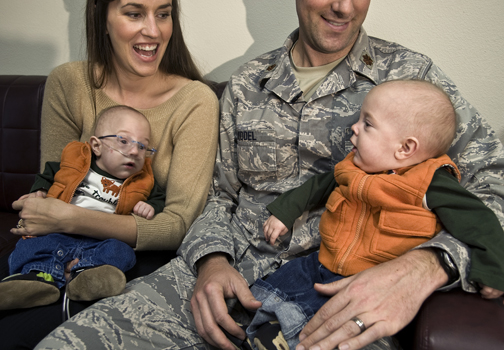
Neonatal Intensive Care Unit

Maj. Cory MIddel and his wife, Laura, share a laugh with their 9-month-old twins, Aaron (left) and James, during an interview about the care they received at the Neonatal Intensive Care Unit at the Wilford Hall Medical Center on Lackland Air Force Base, Texas. Aaron and James were born prematurely and weighed 1 1/2 pounds and 2 1/2 pounds respectively.